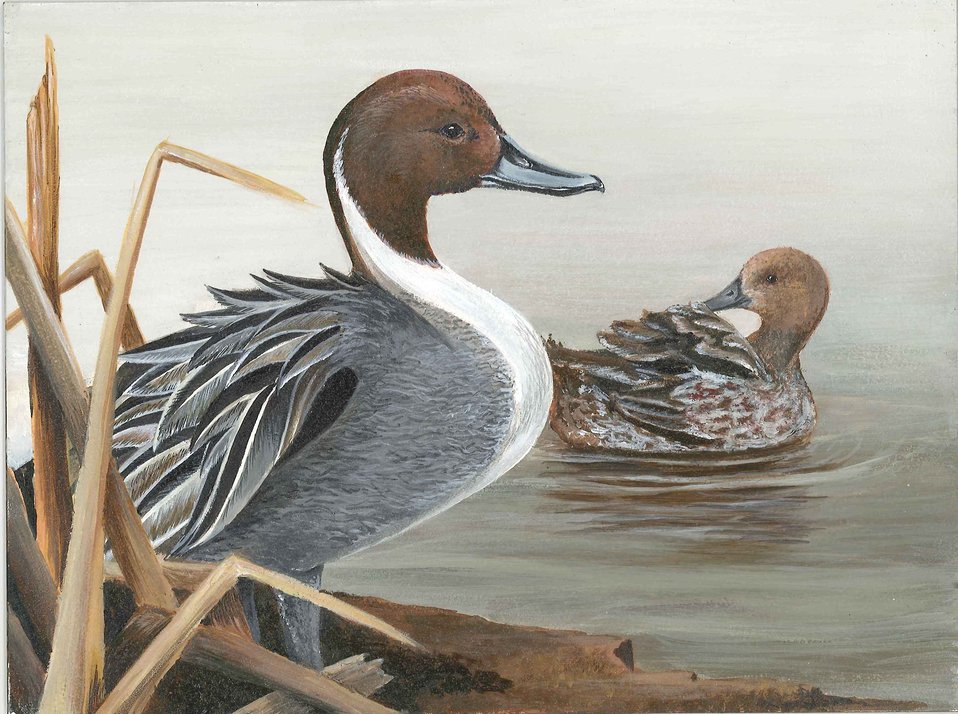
Missouri

2012 Jr Duck Stamp Program
State Best of Show
Missouri